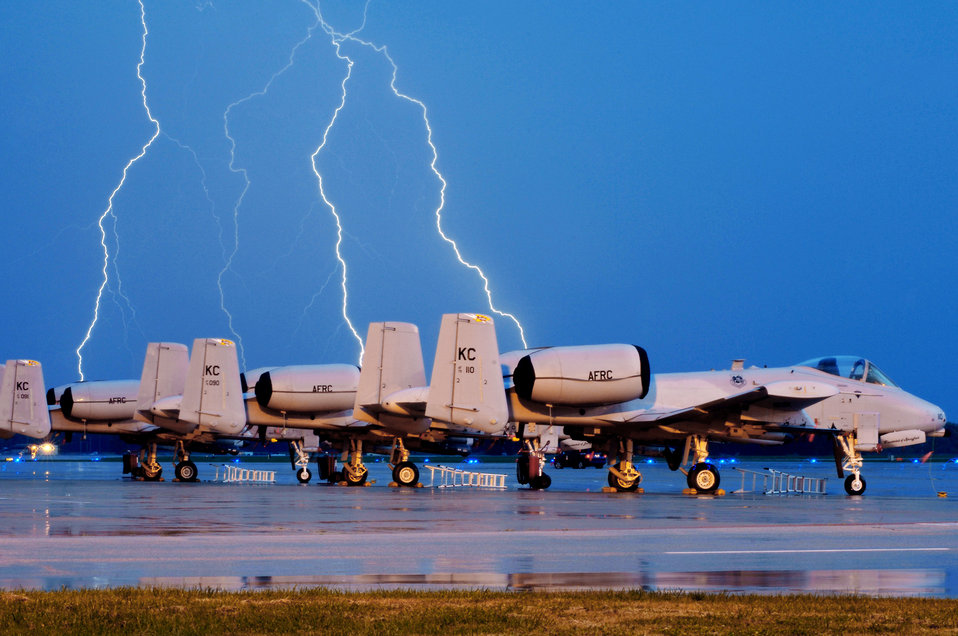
Preemptory strike

Lighting strikes behind A-10 Thunderbolt IIs on the Whiteman Air Force Base, Mo., flightline during an early morning thunderstorm Oct. 20, 2009. The 442nd Fighter Wing maintains a fleet of 27 A-10s.